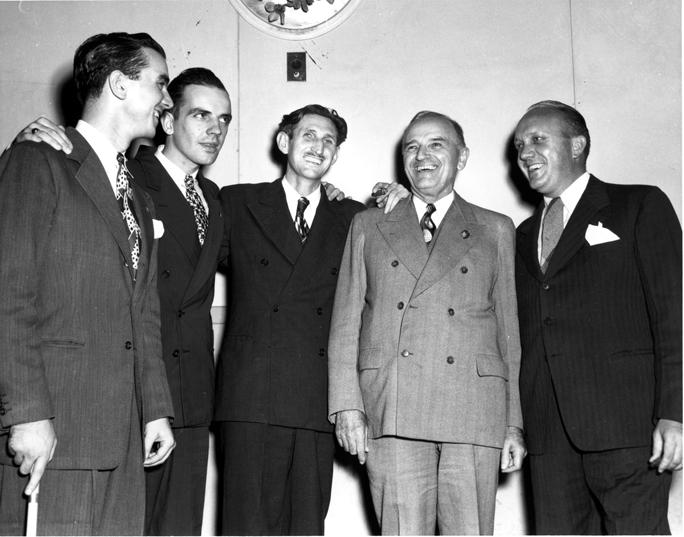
Meeting at Oak Ridge Y-12